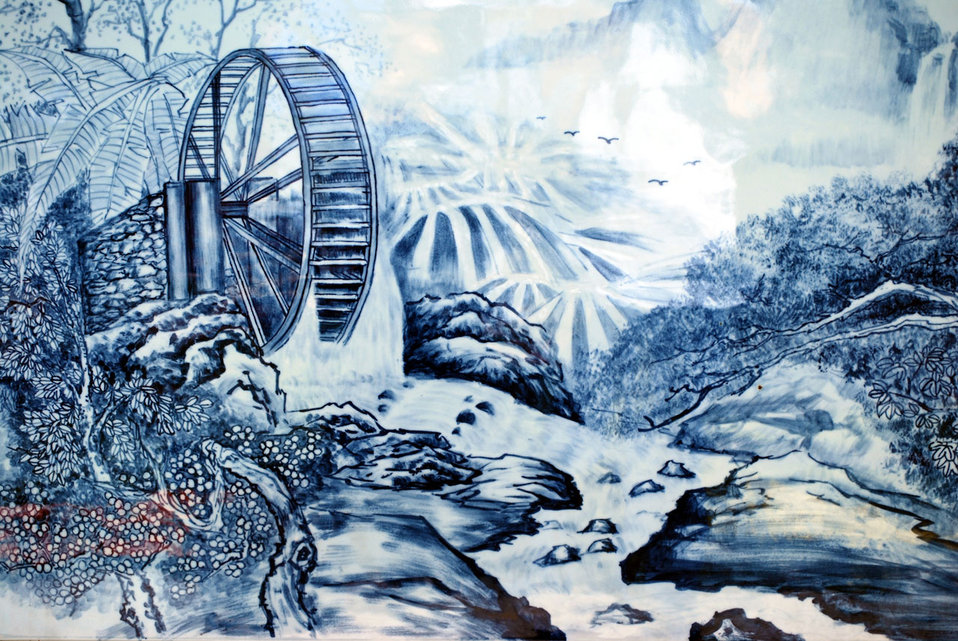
Chinese porcelain picture 2

A chinese picture made from porcelain.